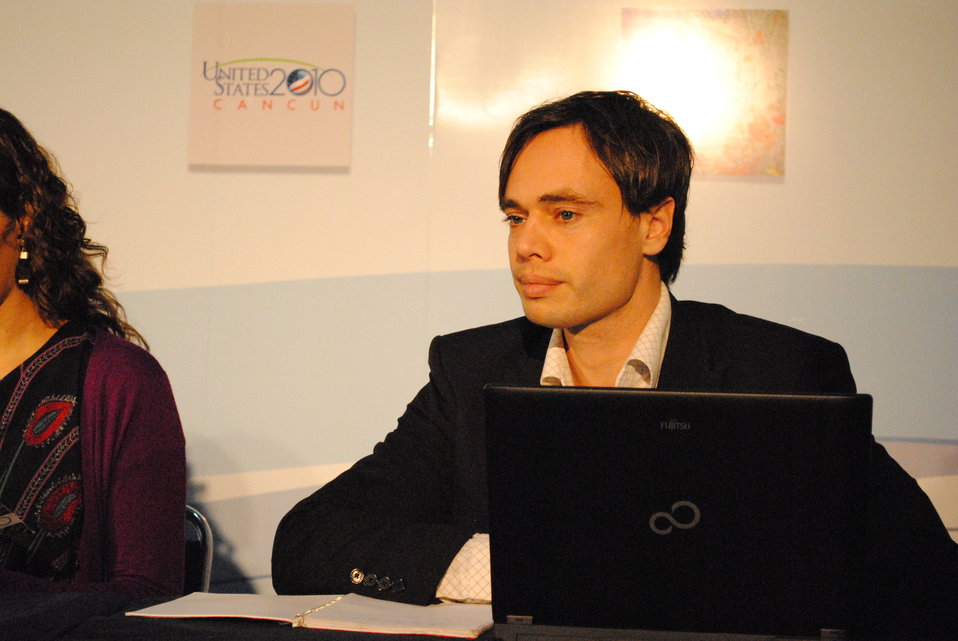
Stefan Bakker Responds to Questions

Stefan Bakker, a panelist in the 'OpenEI Platform' side event, responds to questions at the U.S. Center at COP-16 in Cancun, Mexico, on December 1, 2010.